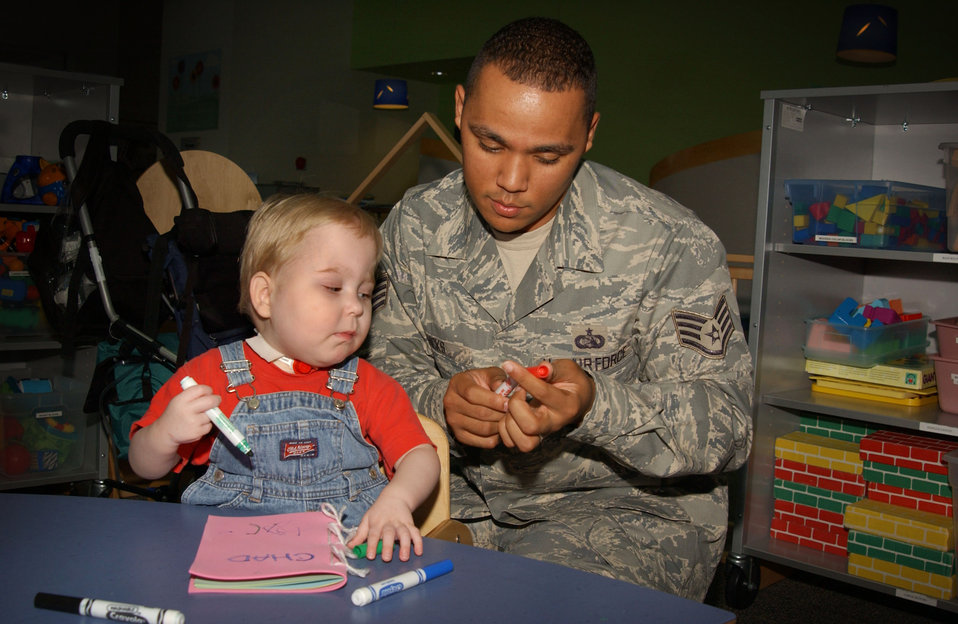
Red looks good?

Staff Sgt. Jewell Hicks Jr. helps Chad, a pediatrics specialty hospital patient, create a book about what motivates him during an